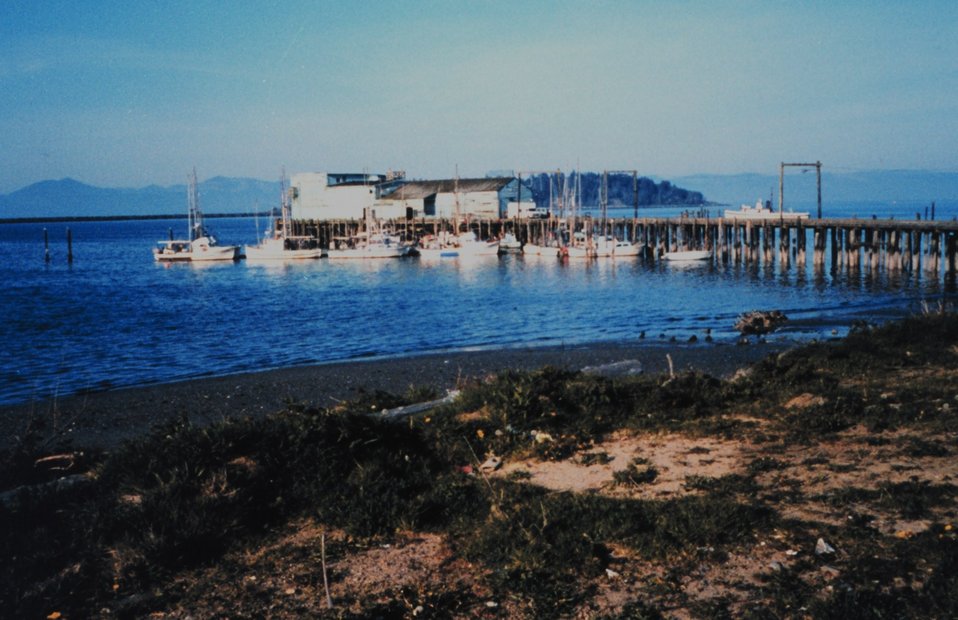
The Northwest Seafoods Company Pier. Near the location of first Coast Survey in Washington in the early 1850's.